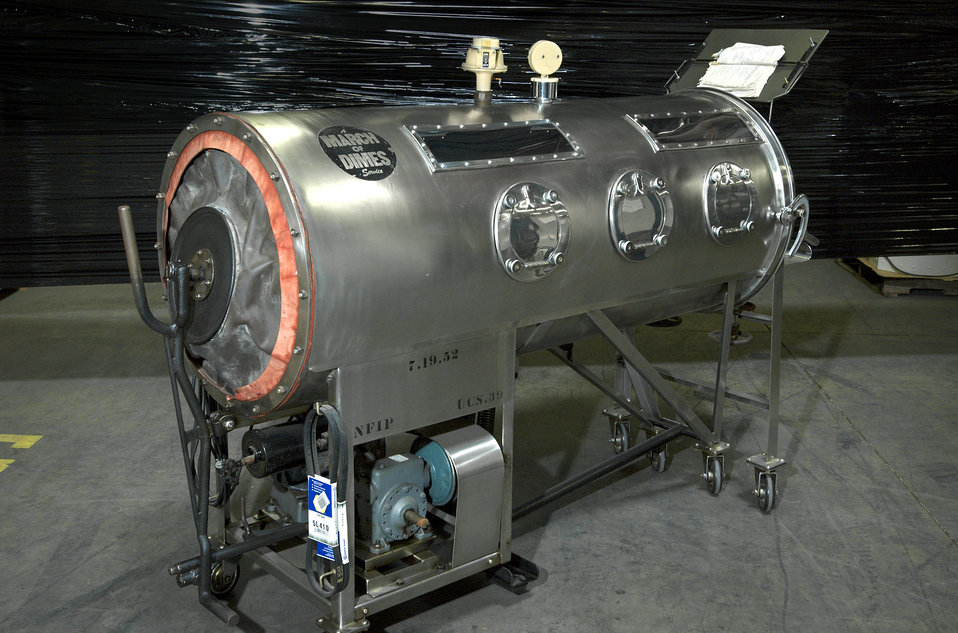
This photograph shows the rear oblique view of an Emerson Respirator, known as an 'iron lung.' Devices such as these were used by polio patients whose ability to breath was paralyzed due to this crippling viral disease.